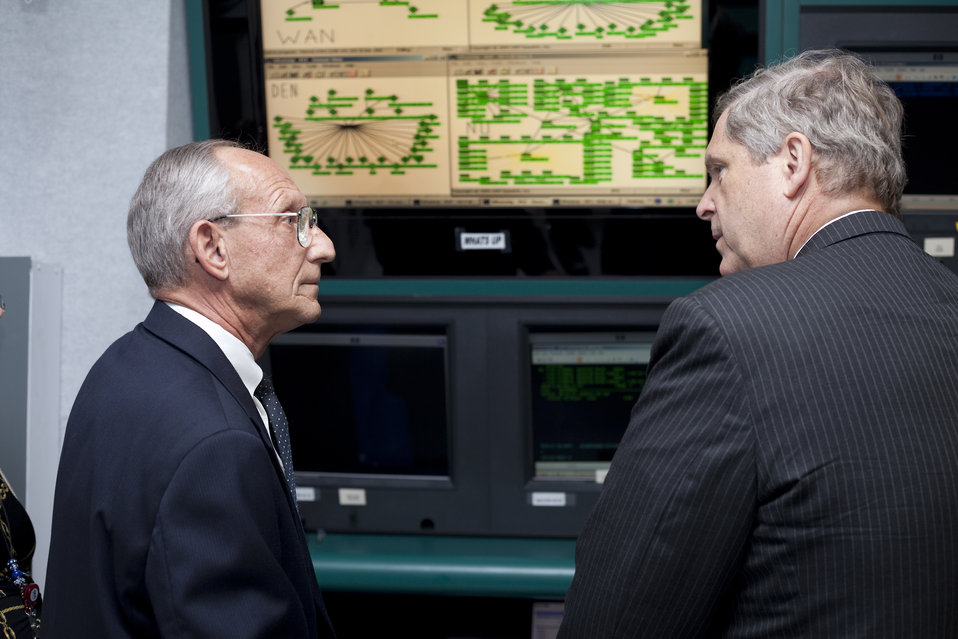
National Finance Center Directore Gill Hawk shows Agriculture Secretary Tom Vilsack the monitors in their Operations and Security Center in New Orleans, LA on Wednesday, May 1, 2013.